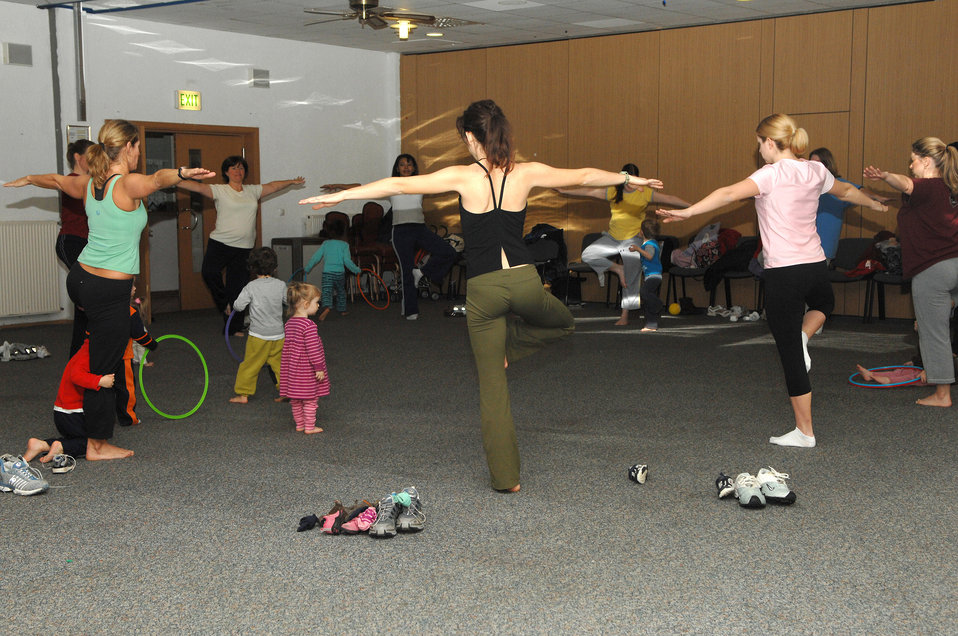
Children, parents get fit together

During the last few minutes of the Mommy and Me Yoga and Fitness class, Ms. Champagne, (far left), does some Yoga moves with the parents as the children watch, Jan. 18 at the Vogelweh Community Center. Ms. Champagne is the instructor for the class.